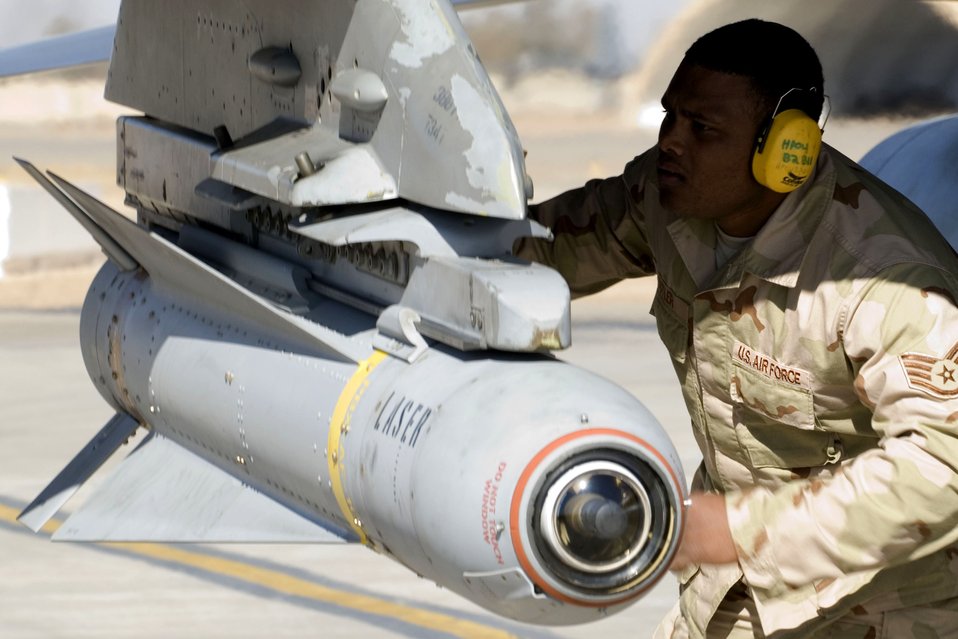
Airmen up in arms

Staff Sgt. Kenneth Butler arms F-16 Fighting Falcon munitions prior to takeoff Jan. 16 at Balad Air Base, Iraq. Once armed, the aircraft took off for a combat mission over the Iraq. Sergeant Butler, a 332nd Expeditionary Maintenance Squadron aircraft armament specialist, is deployed from Hill Air Force Base, Utah.